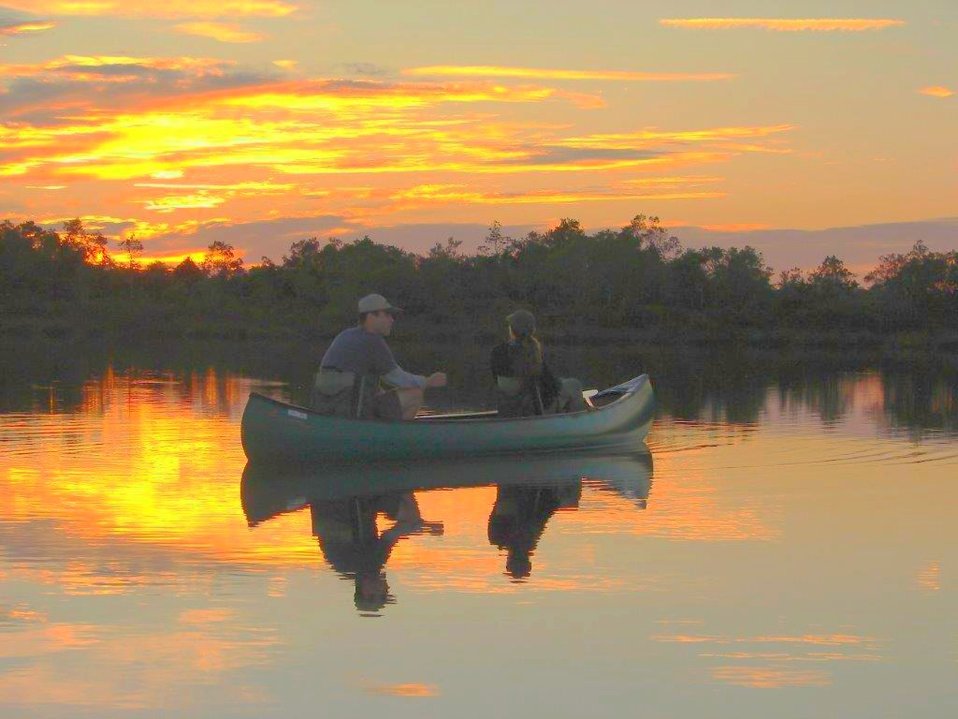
Canoeing at sunset

Canoers at sunset in Okefenokee National Wildlife Refuge.